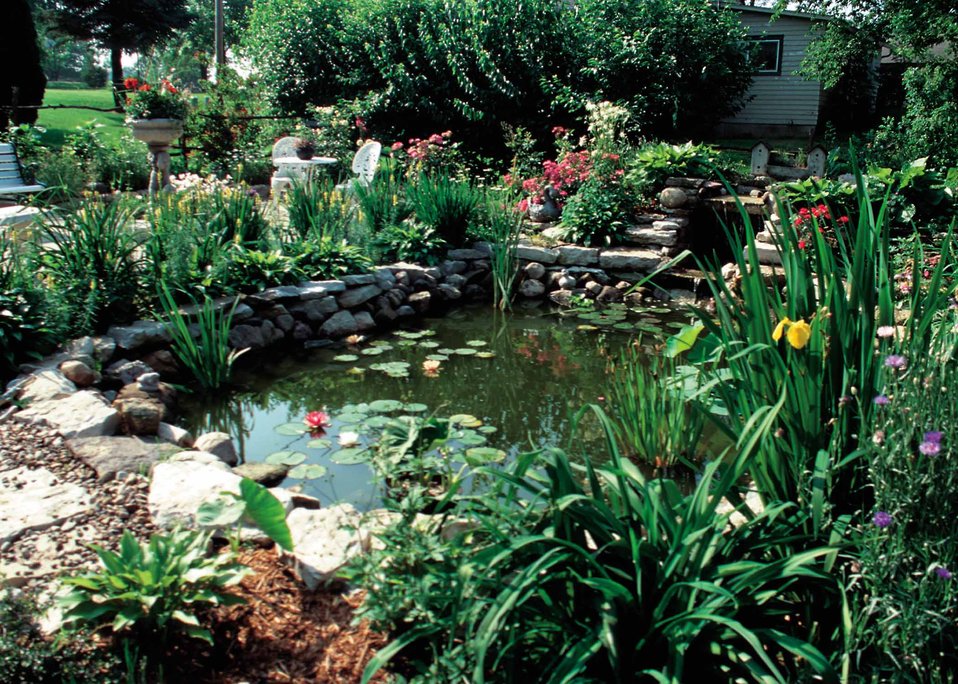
A pond is the focal point of a backyard conservation scene in a backyard in Cantril, Iowa, a small town in Van Buren County in southeastern Iowa.